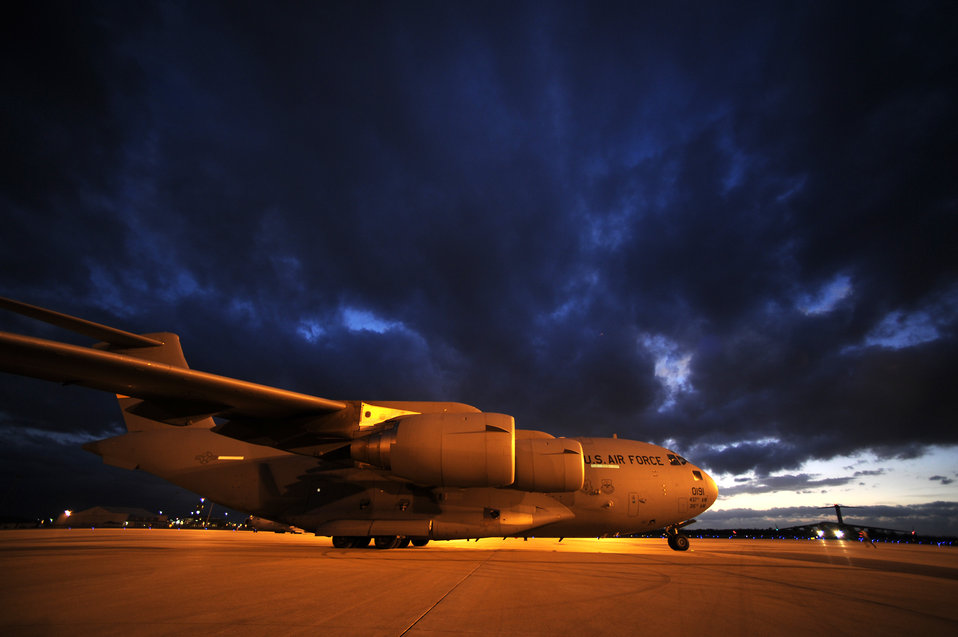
The endless sky

A C-17 Globemaster III from Joint Base Charleston, S.C. stands ready for boarding Dec. 15, 2010, before a large formation exercise on Fort Polk, La. Airmen from JB Charleston and Soldiers from the Joint Readiness Training Center at Fort Polk conducted airborne operations to demonstrate global airpower.